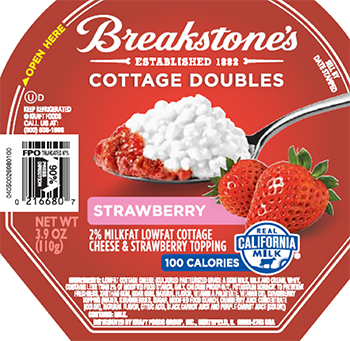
RECALLED – Cottage Cheese products

May 17, 2014 – Product Recall – Kraft Foods Group Voluntarily Recalls Select Cottage Cheese Products Due to Out-of-Standard Storage Temperatures
Certain Knudsen Cottage Cheese, Breakstone’s Cottage Cheese, Simply Kraft Cottage Cheese and Daily Chef Cottage Cheese Products Included in the Recall
.